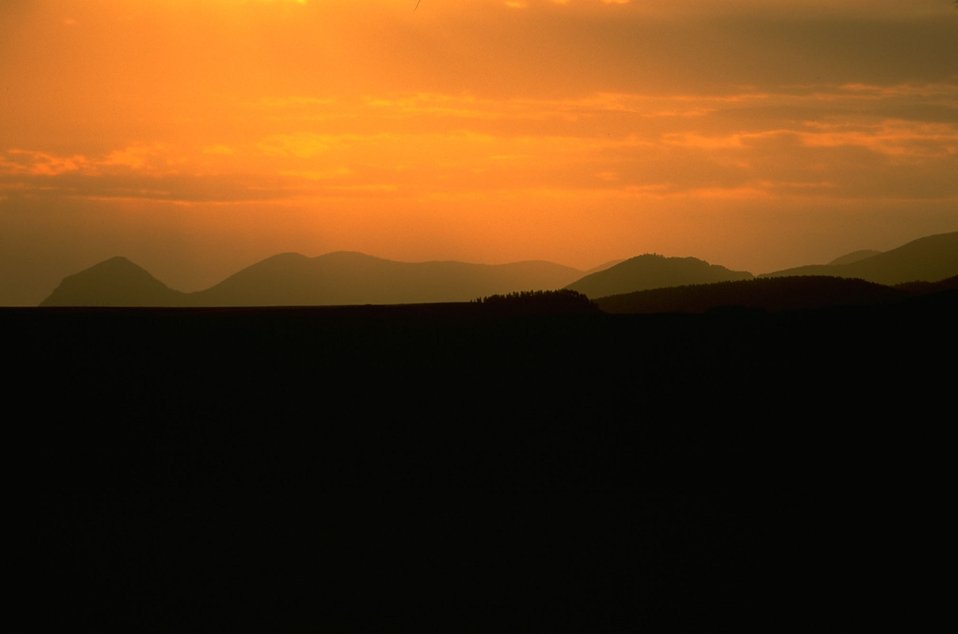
Sunset over the Missouri Breaks